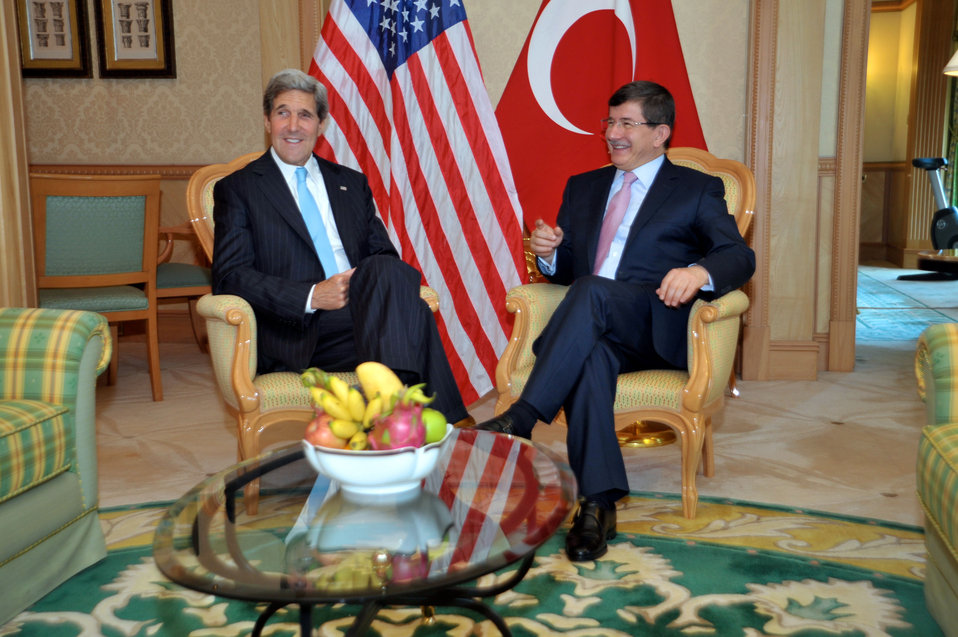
Secretary Kerry Meets With Turkish Foreign Minister Davutoglu

U.S. Secretary of State John Kerry sits with Turkish Foreign Minister Amhet Davutoglu before a bilateral discussion in Bandar Seri Begawan, Brunei, on July 2, 2013.